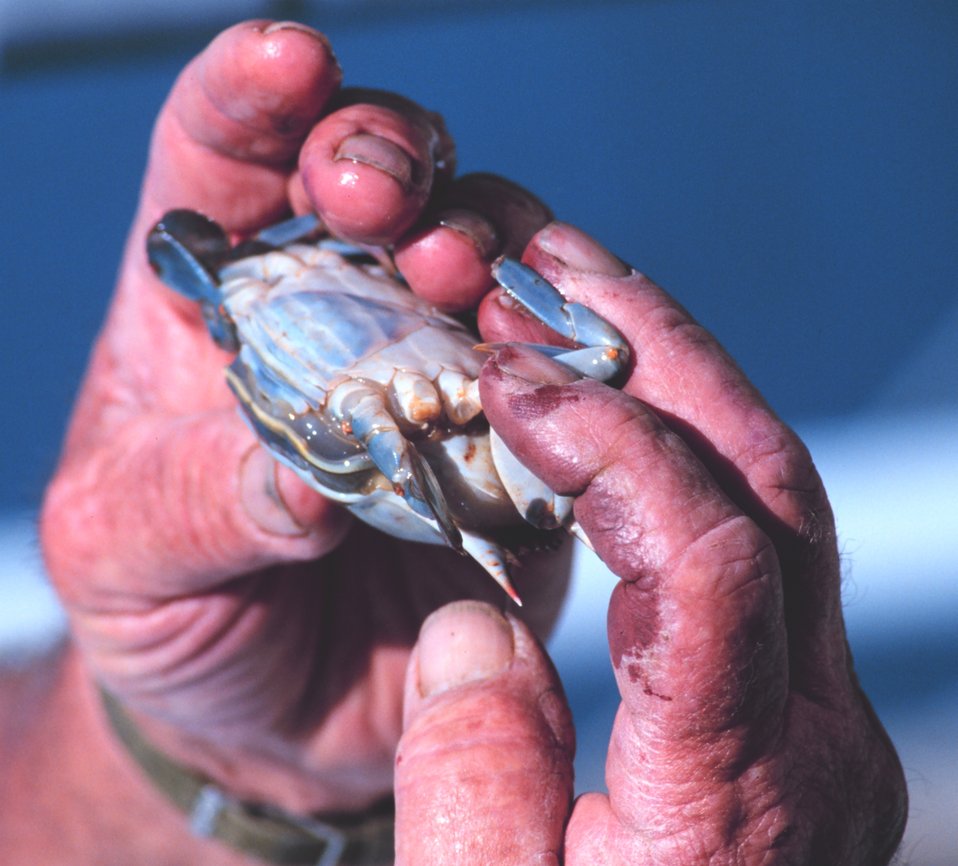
Holding a soft-shell 'peeler' crab (female)